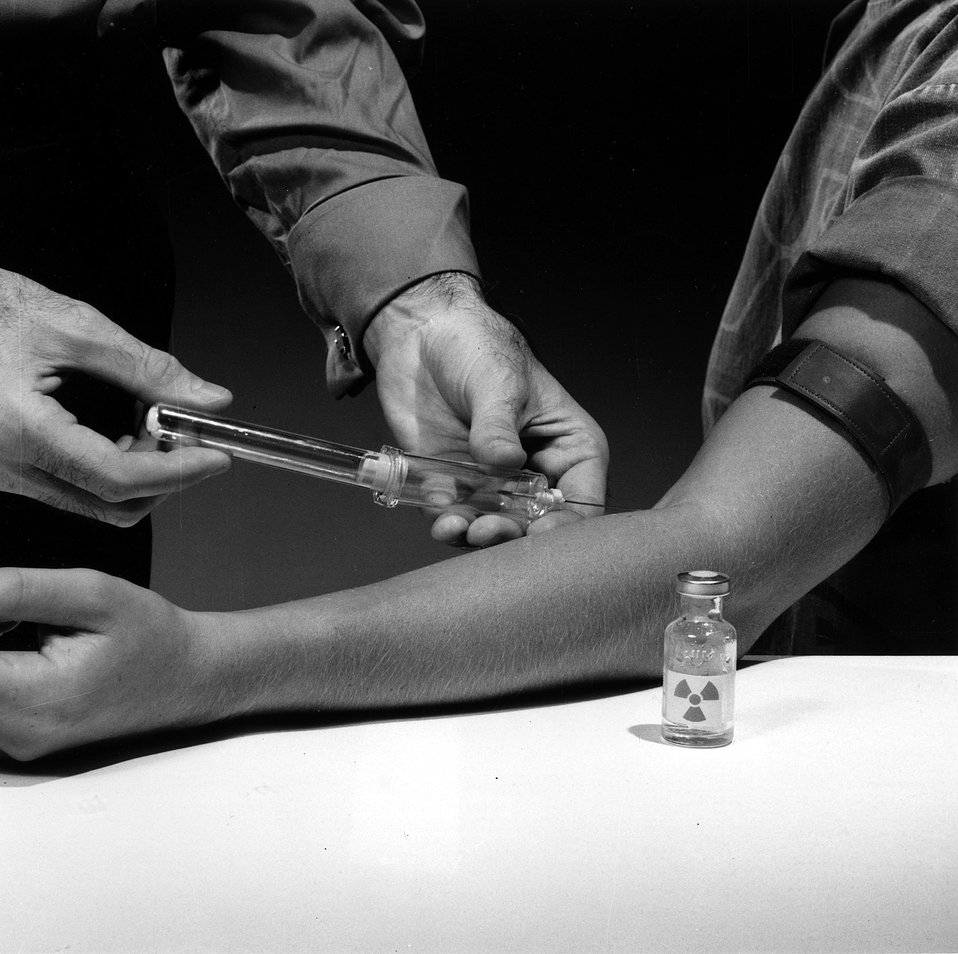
A diagnostic kit for labeling a patient's own red blood cells has been developed at Brookhaven.